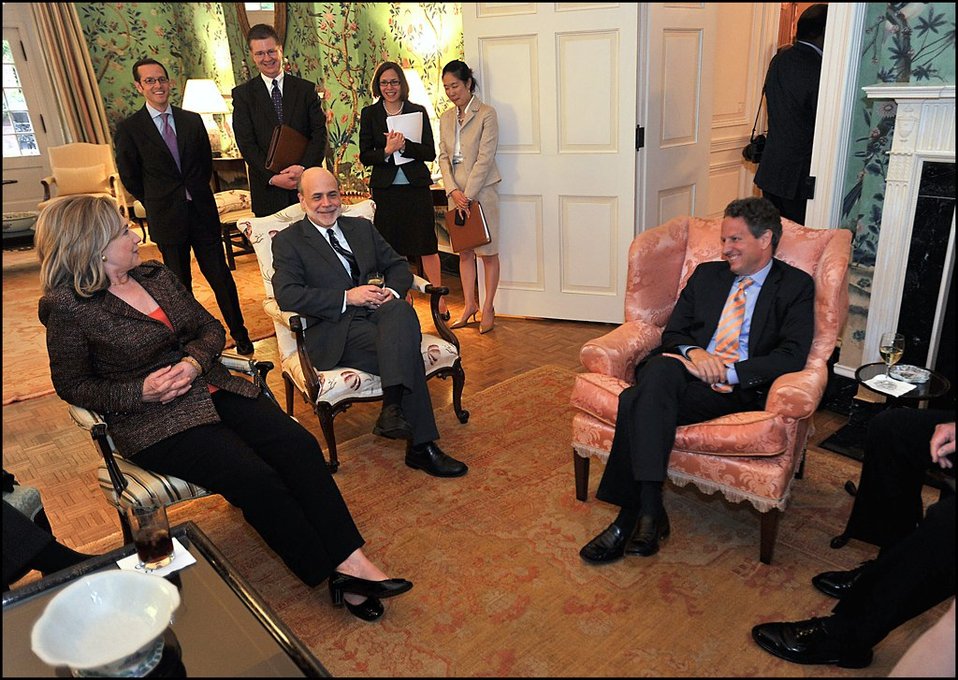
U.S.-China Strategic and Economic Dialogue

Secretary of State Hillary Clinton, Chairman of the Federal Reserve Ben Bernanke and Secretary of the Treasury Tim Geithner at the Blair House before a working dinner with their counterparts in the U.S.-China Strategic and Economic Dialogue.